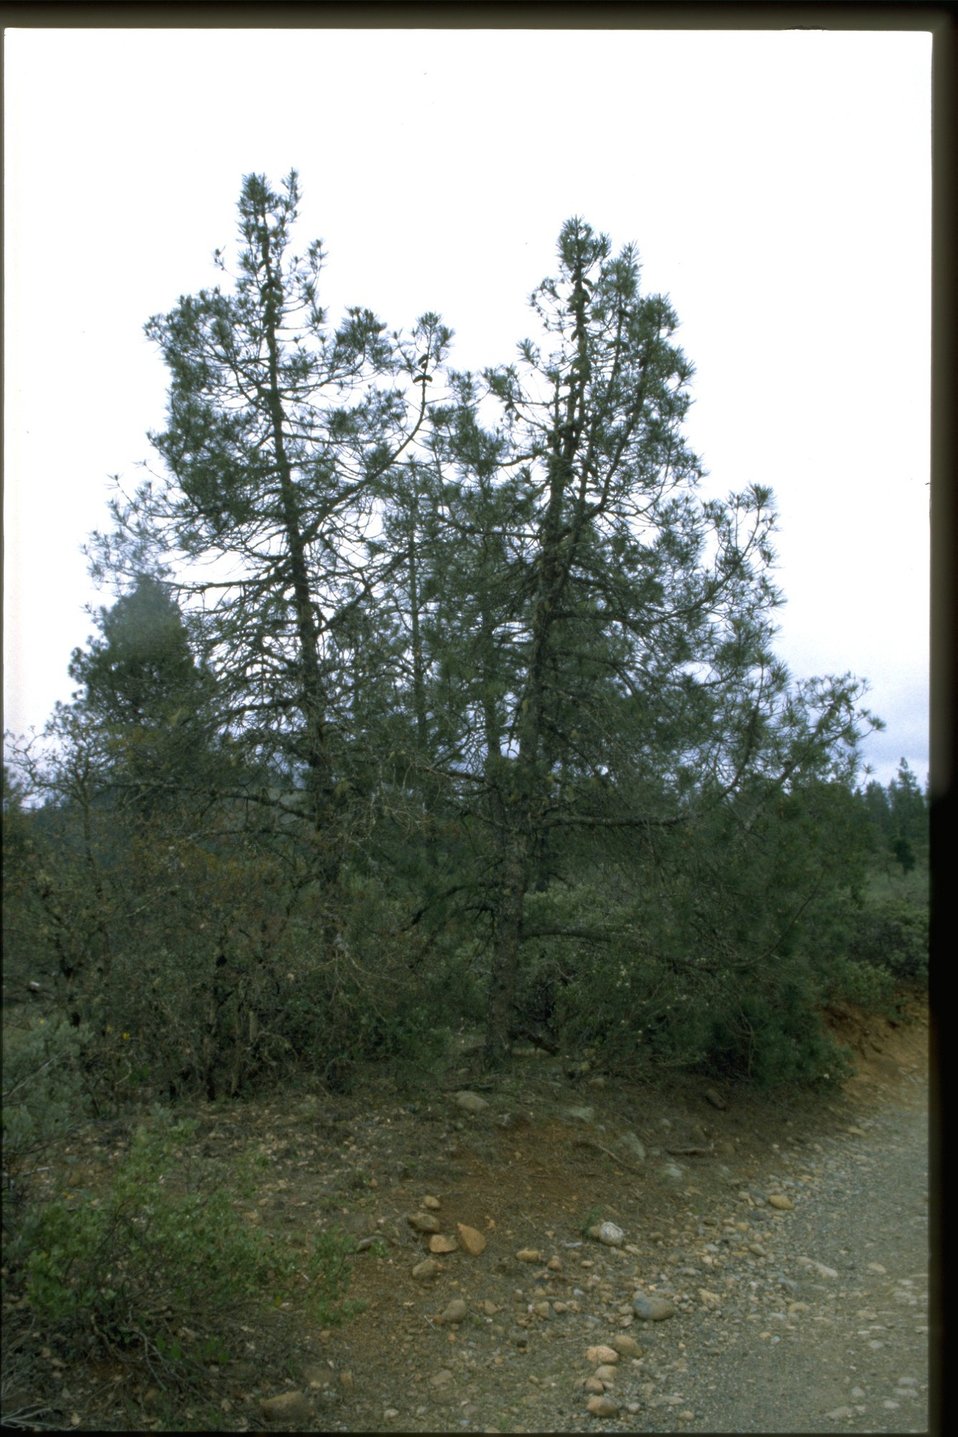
Farshot of Pinus attenuata.